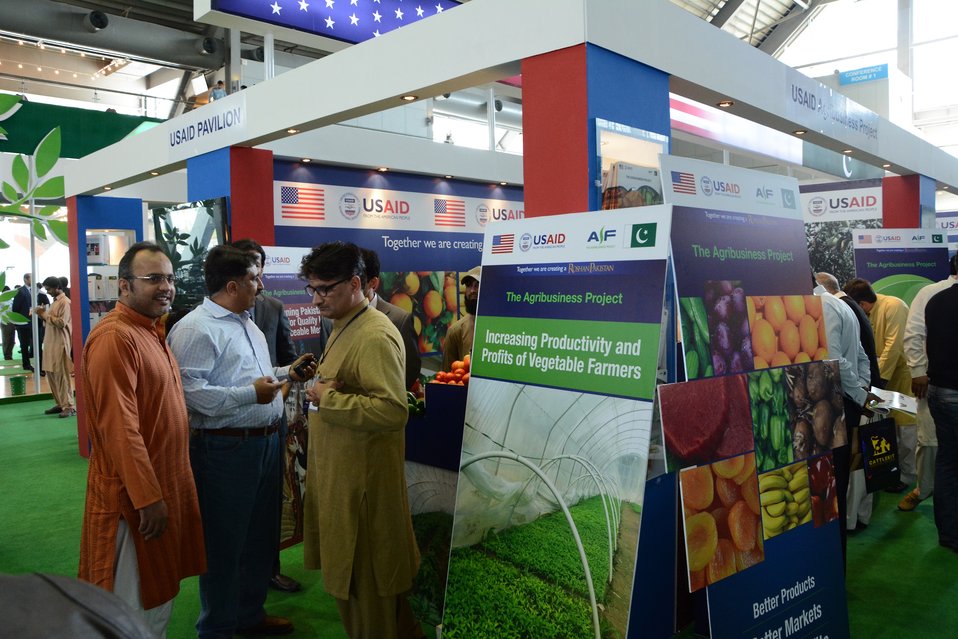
TAP4